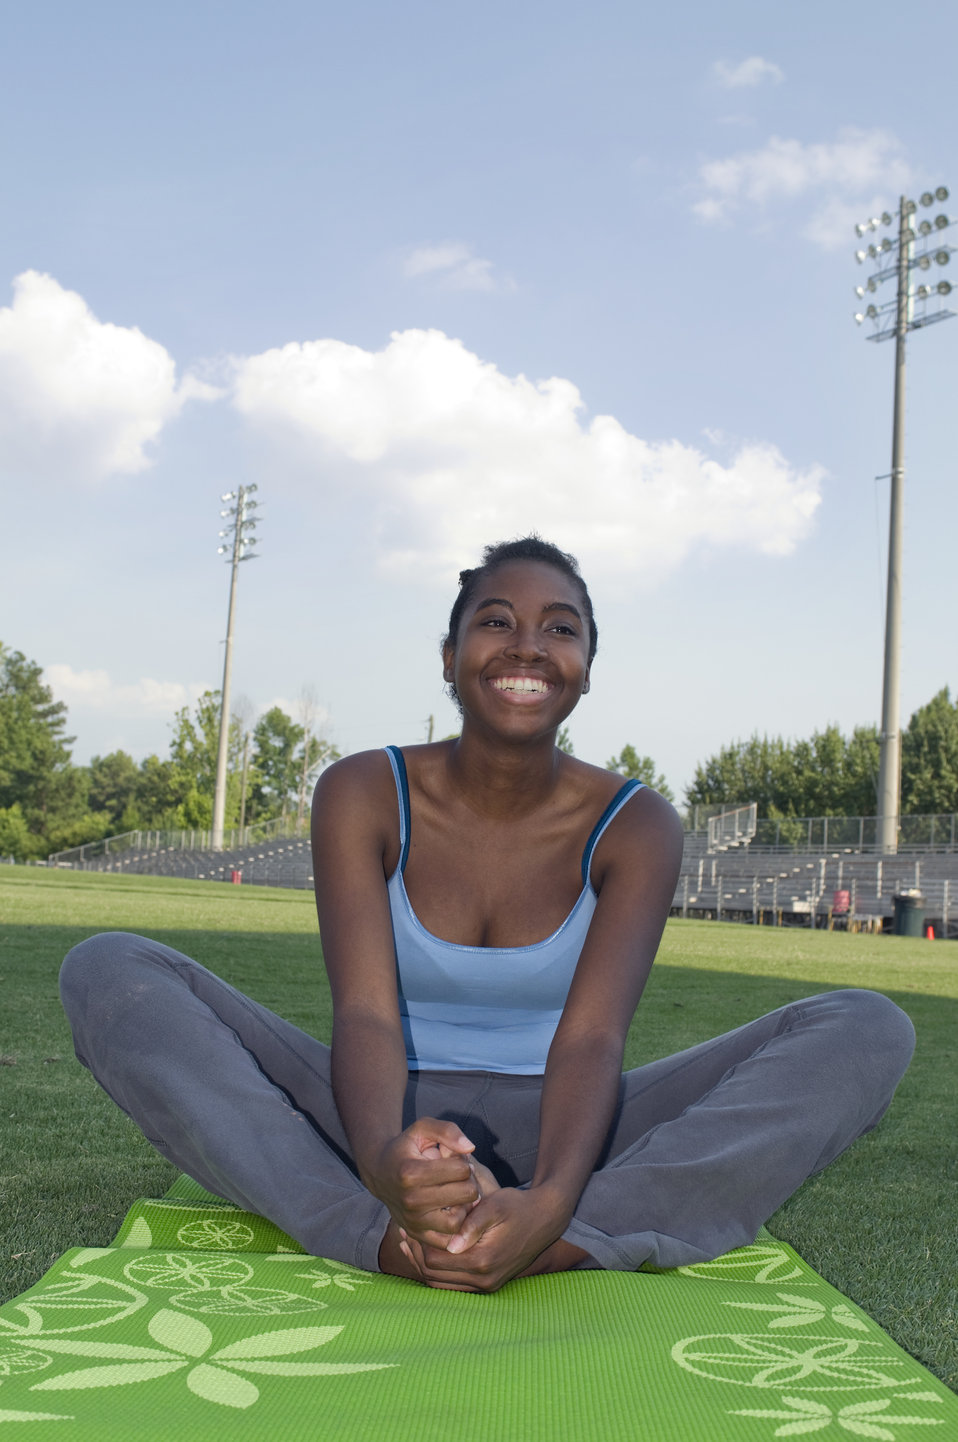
The woman pictured here seated on a bright green mat on the grass in the middle of a running track, was in the process of warming up prior to her vigorous exercise routine, and had assumed a butterfly position, whereupon, the soles of her feet were opposed and touching, and she'd grasped her feet, using her elbows to apply pressure to her inner thighs, helping to stretch her inner thigh and groin muscles. Hopefully, she'd applied sunscreen to her sun-exposed skin prior to arriving at the track, and that she'd packed some fresh drinking in order to rehydrate herself during her exercise routine.